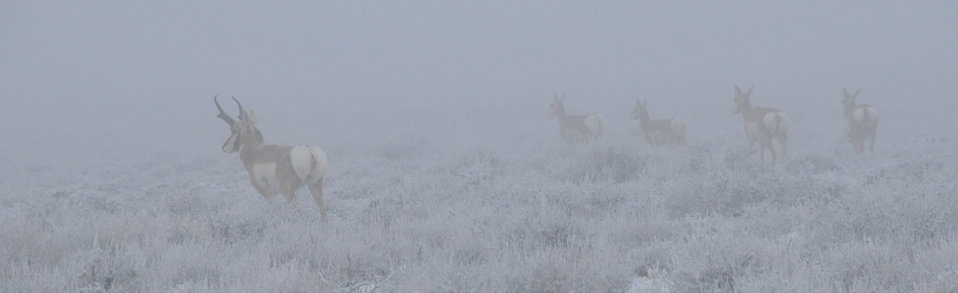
Pronghorns in the fog Seedskadee NWR

A group of pronghorns appear out of the fog at Seedskadee NWR.